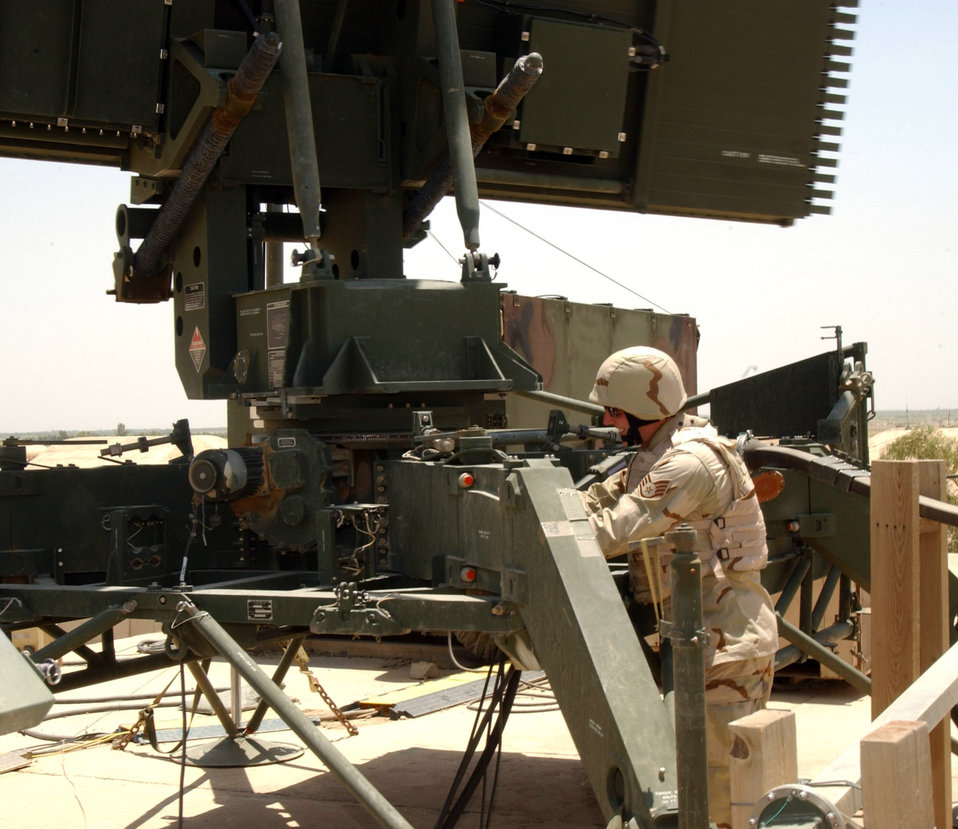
Maintainers keep Balad radar running 'round the clock

During a night-shift maintenance inspection June 9, Senior Airman Gerald Fuller (front) and Staff Sgt. Christopher Sokaski (back) check all settings on the radar system at Balad Air Base, Iraq. Airman Fuller and Sergeant Sokaski are 727th Expeditionary Air Control Squadron ground radar maintenance technicians, both deployed from Hill AFB, Utah.